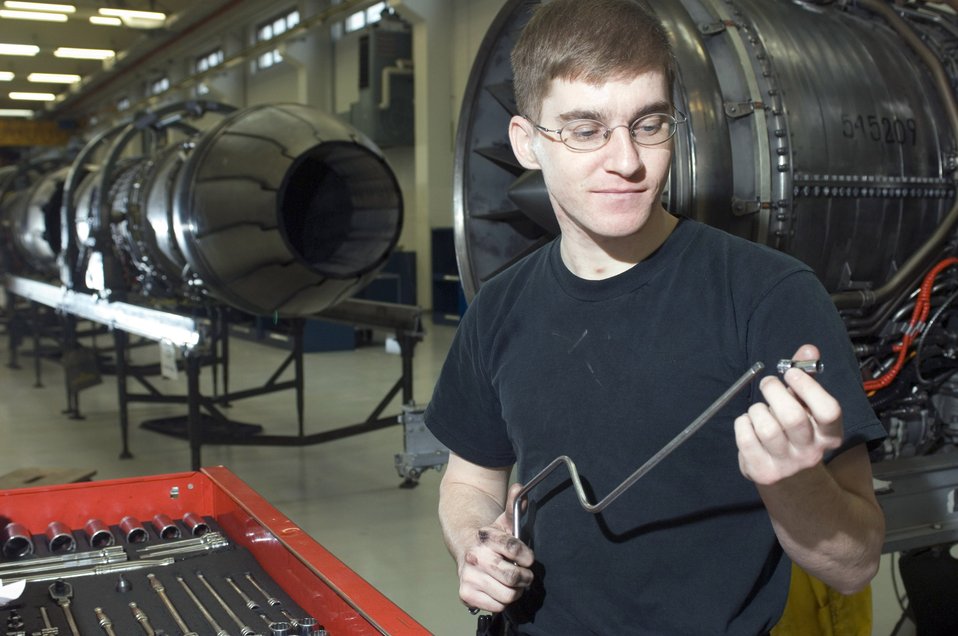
Spangdahlem mechanics fix jet engines 'on the line'

Staff Sgt. Matthew Gross puts a socket on a wrench to work on an F-16 Fighting Falcon jet engine at Spangdahlem Air Base, Germany, on Friday, March 24, 2006. Sergeant Gross of West Lake, La., is a jet engine mechanic with the 52nd Component Maintenance Squadron's propulsion flight.